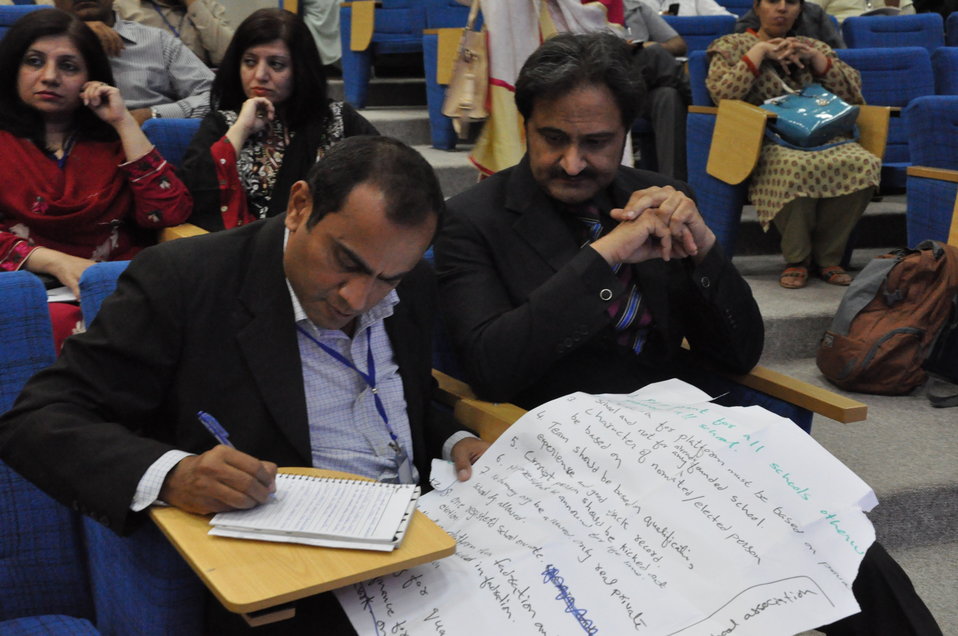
Following group discussions, a team leader notes down the recommendations